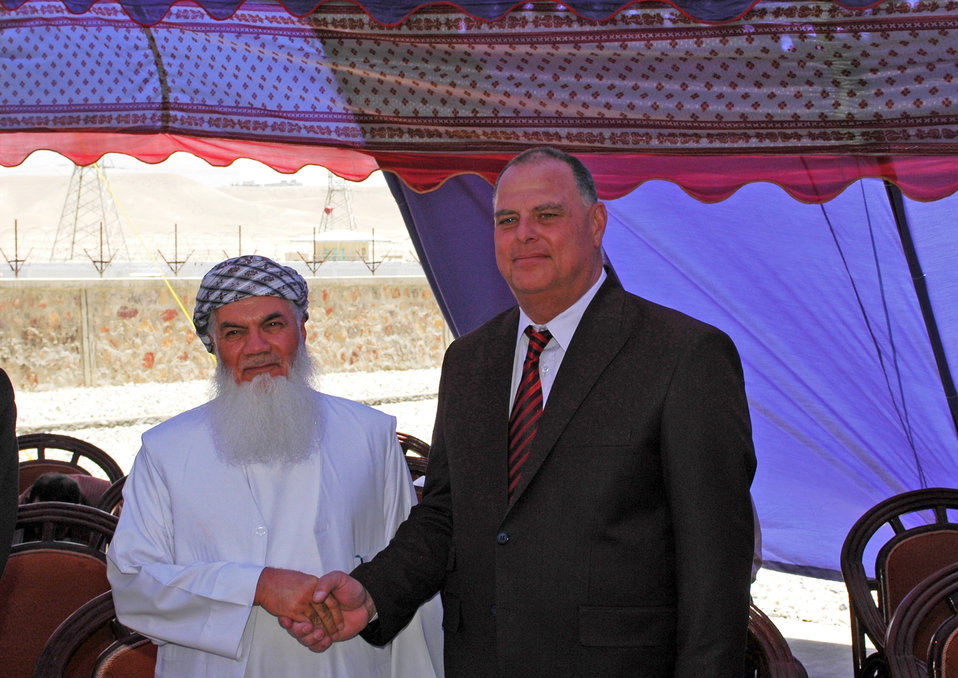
105 MW Tarakhil Power Plant Handover